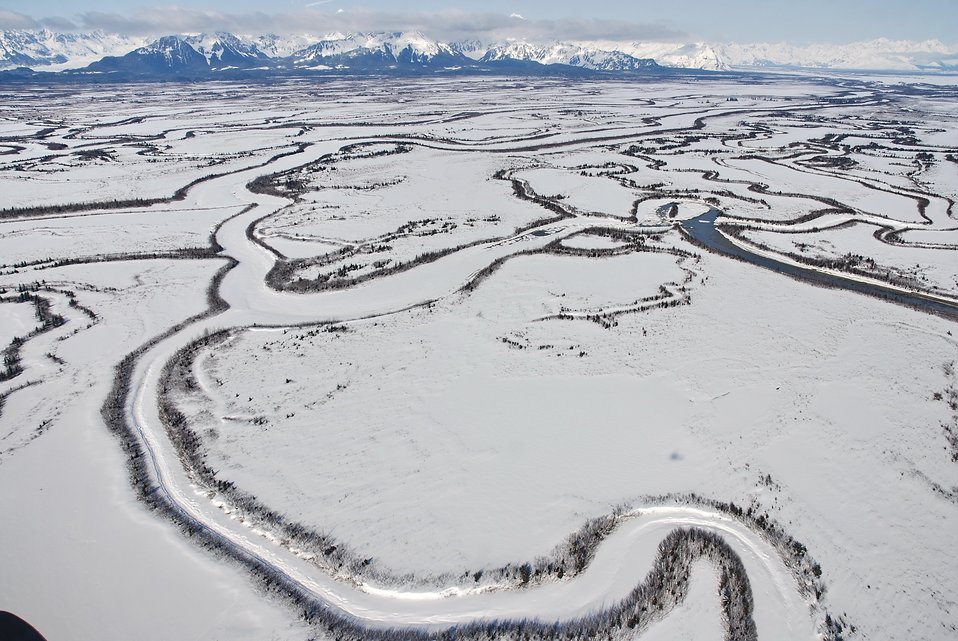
An aerial view of meandering frozen channels of the Copper River reminiscent of Nazca Lines.